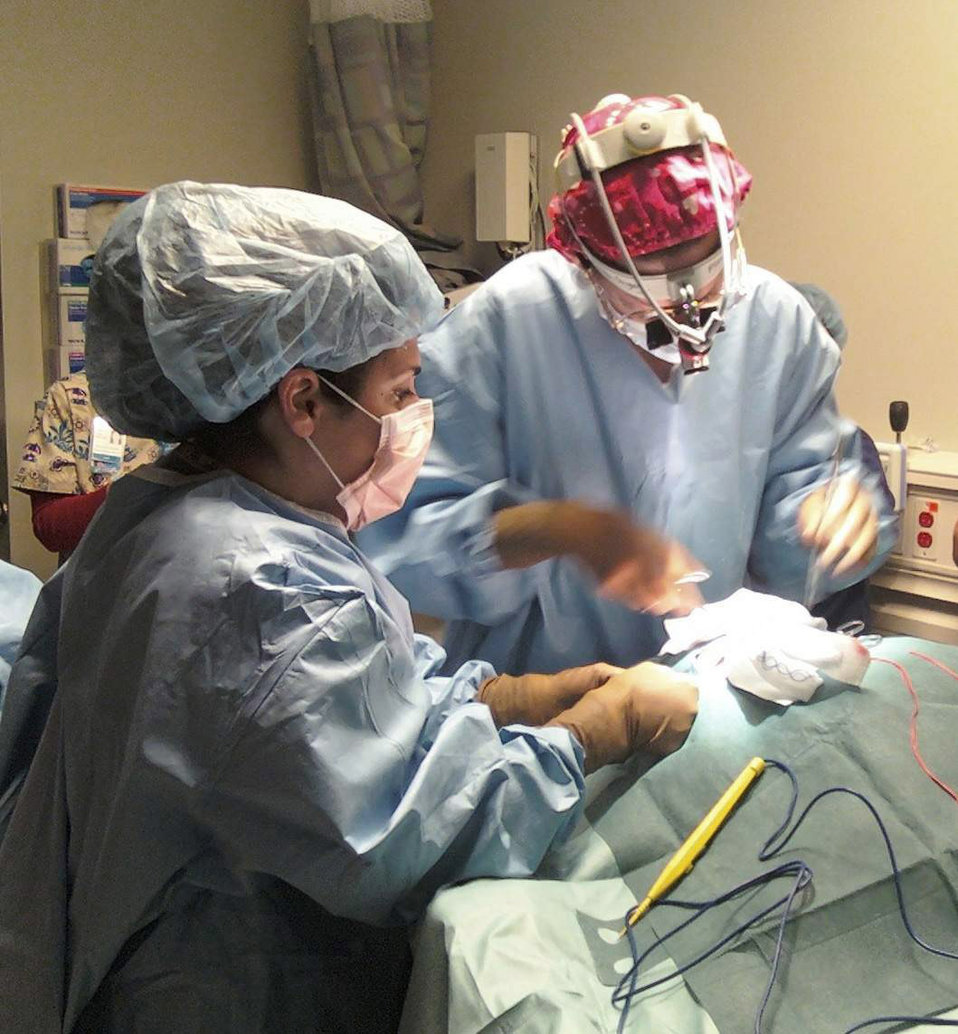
Wilford Hall team transports critically ill infant

Extracorporeal membrane oxygenation transport services director Maj. (Dr.) Melissa Tyree (left) and pediatric surgeon Maj. (Dr.) Colleen Fitzpatrick perform surgery on an 8-month-old child at Scott and White Hospital Feb. 9. The two Wilford Hall Medical Center doctors placed the baby on ECMO, a heart-lung bypass machine, and transported her from the hospital in Temple, Texas, to a hospital in San Antonio. The child was suffering from respiratory failure and the process improved her chances for survival.